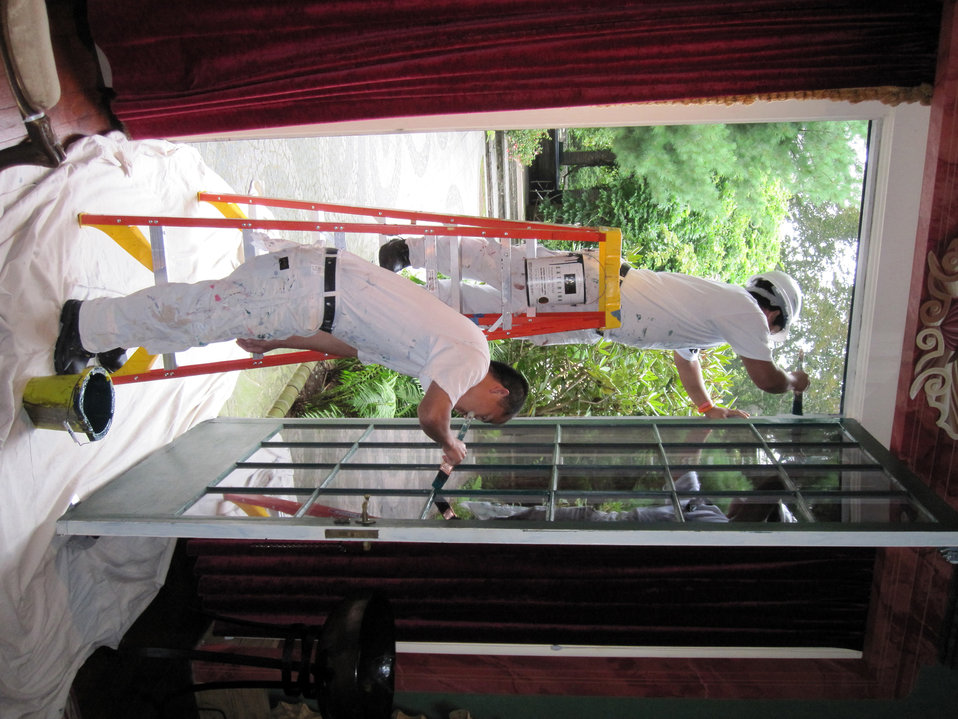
Job Corps students help to restore Grey Towers National Historic Site. $2,440,000 in Recovery Act funds were allocated to repair and refurbish the house and grounds of the ancestral home of the first Chief of the Forest Service and two-term Pennsylvania governor Gifford Pinchot on Tuesday August 3, 2010 in Milford, PA. This project at the 123-year-old site repairs various deficiencies with the buildings and grounds, restores areas of the historic landscape, improves visitor safety and site security, provides a more sustainable facility, and enhances the visitor experience. It helps to ensure the historic site is maintained for years to come.